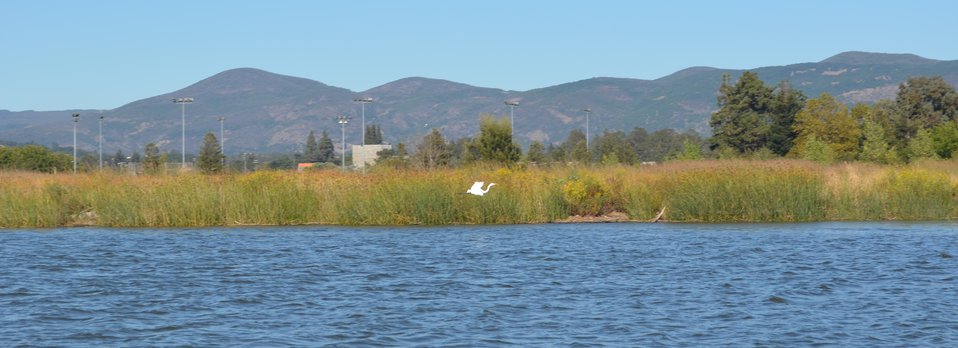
Napa flood risk reduction efforts

Among the many unique features of this project is a beautiful wetlands area. (US Army Corps of Engineers/DeDe Cordell)